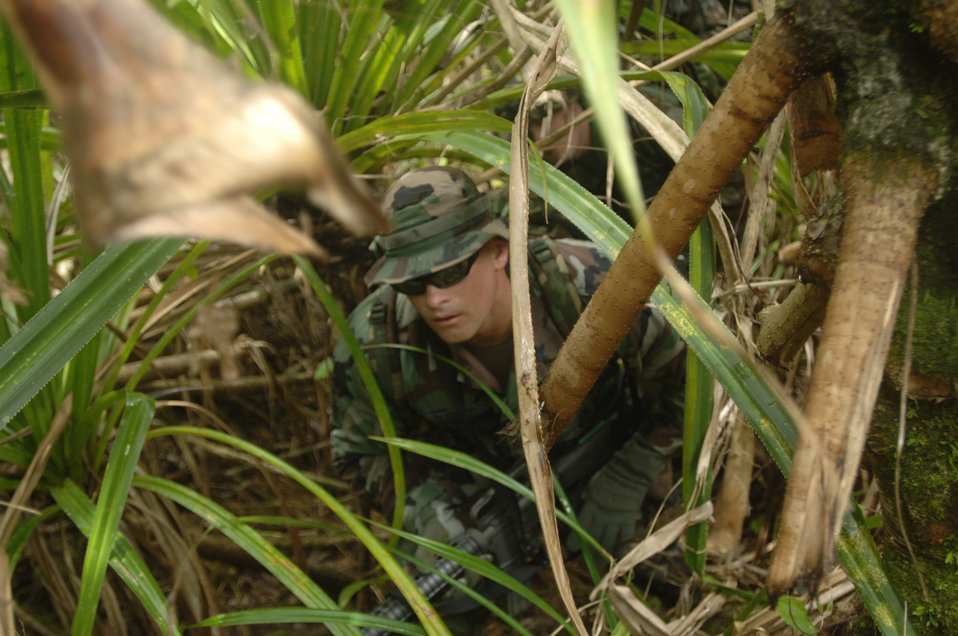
Special Response Team Training Course

ANDERSEN AIR FORCE BASE, Guam -- Airman 1st Class Dennis Nugent cuts a path through the thick jungle of southern Guam while on a patrolling exercise during the Special Response Team Course held at Commander Naval Forces Marianas. SRT is a specialized course used to train security personnel in close combat, specialized weapons, building clearing techniques and military operations on urbanized terrain. Airman Nugent is assigned to the 613th Contingency Response Group.